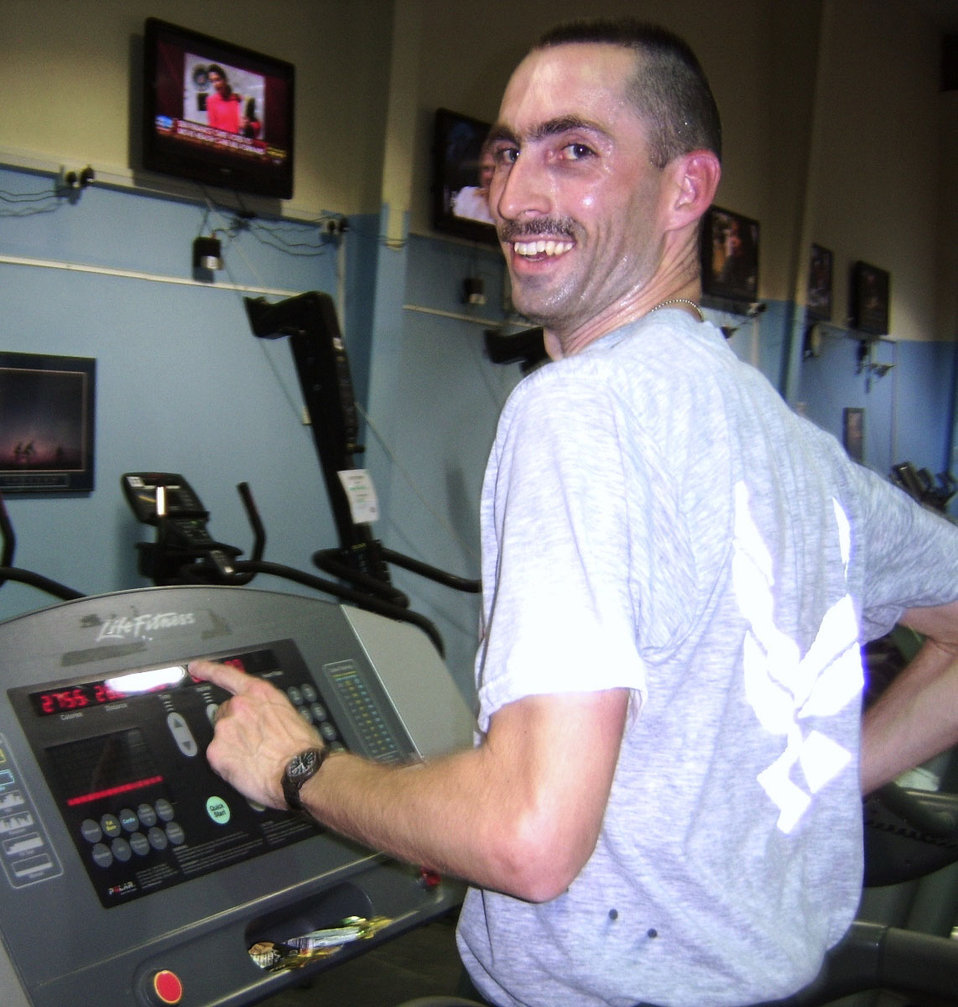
Treadmill marathon

Staff Sgt. Jason Blair, a 387th Air Expeditionary Group emergency management craftsman at an air base in Southwest Asia, is all smiles after running 26.2 miles on a treadmill at the base fitness center Oct. 13, 2009. He ran the marathon distance in a personal best time of 2 hours and 56 minutes.